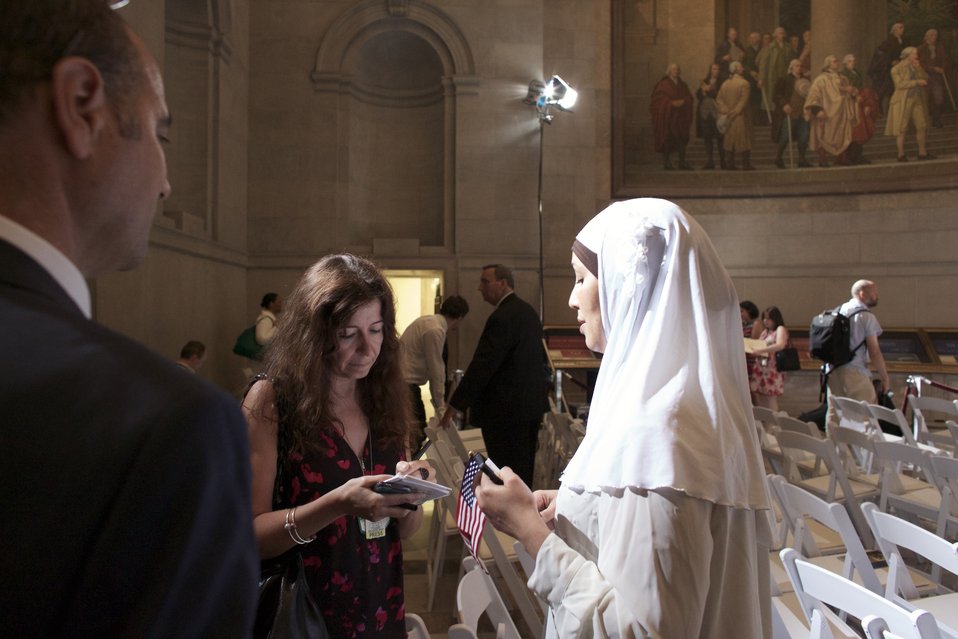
Naturalization Ceremony with Michelle Obama